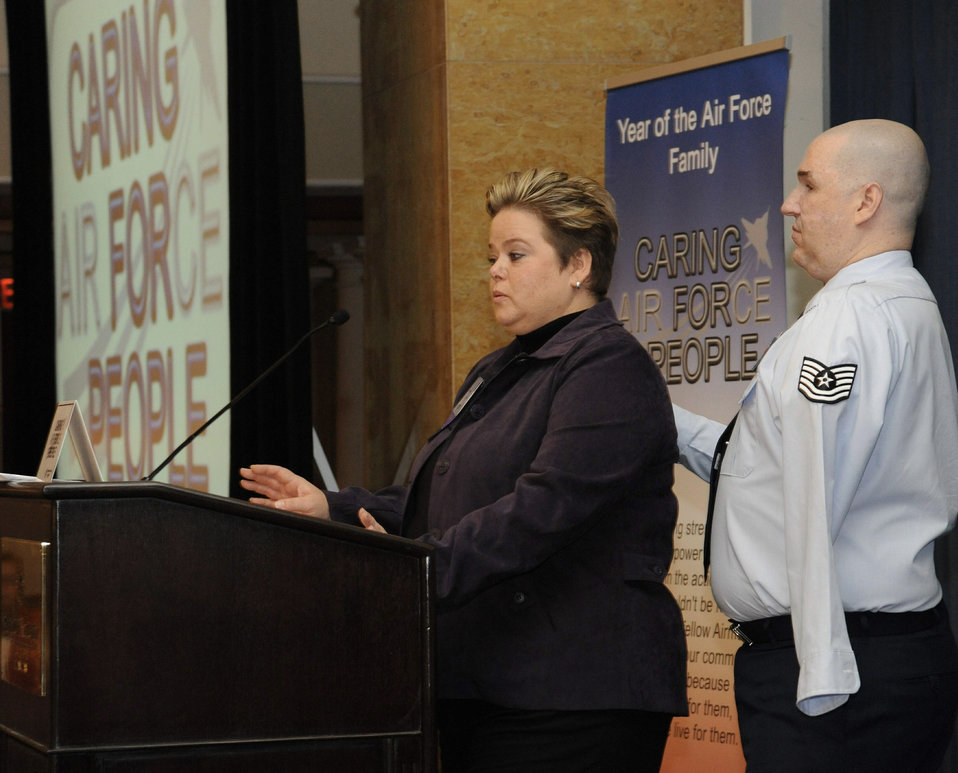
Family care forum kick starts Year of the Air Force Family

Annette Slaydon and her husband, Tech. Sgt. Matt Slaydon, speak to the audience and senior leadership panel during the Year of the Air Force Family: Caring for People Forum April 2 in Arlington, Va. The Slaydons spoke about the importance of deployment preparation, wounded warrior care and the importance of the Air Force family. Sergeant Slaydon is an explosive ordnance technician from Luke Air Force Base, Ariz., who received extensive injuries from a terrorist's improvised explosive device in 2007 while deployed to northern Iraq. Sergeant Slaydon lost vision in both eyes and his left arm.